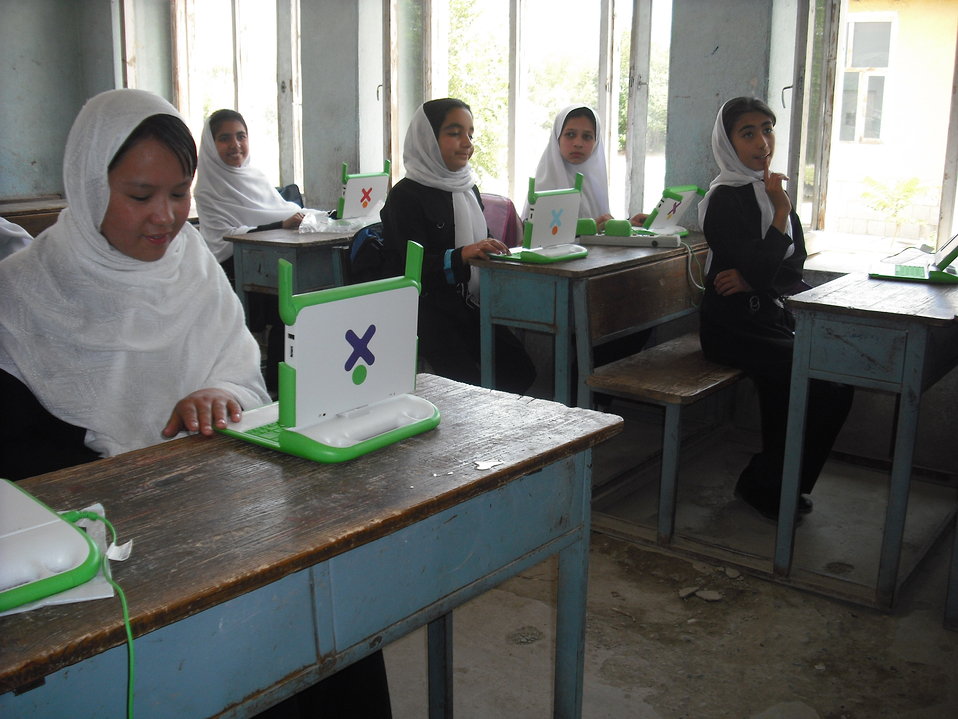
One laptop Per Child